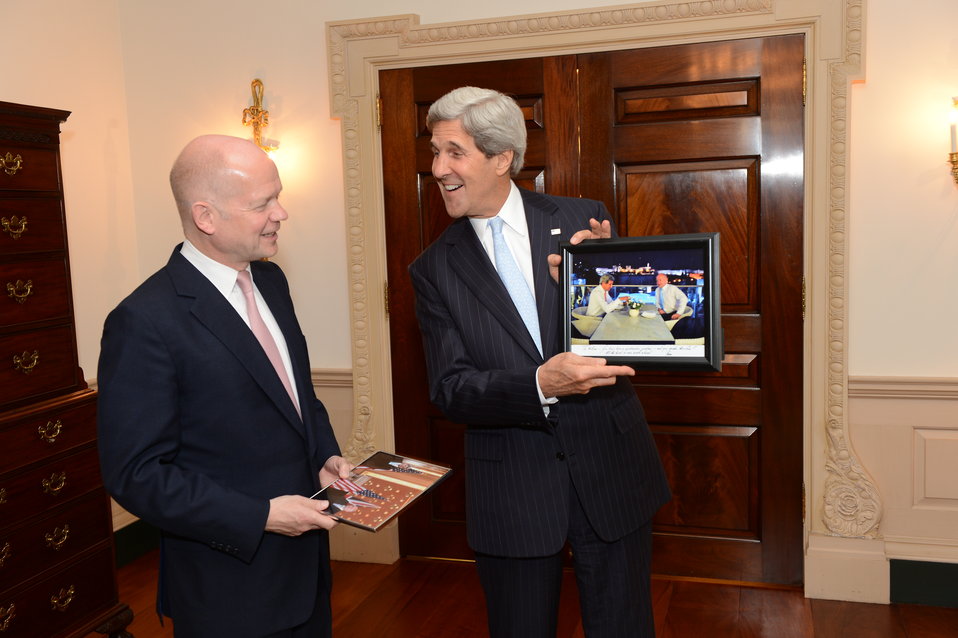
Secretary Kerry and UK Foreign Secretary Hague Exchange Photos

U.S. Secretary of State John Kerry displays a photo of him and UK Foreign Secretary William Hague chatting on a hotel terrace in Jerusalem as the two leaders exchanged personal gifts before a bilateral meeting at the U.S. Department of State in Washington, D.C., on June 12, 2013. Secretary Hague presented Secretary Kerry with a photo of the two at a news conference in London earlier this year.